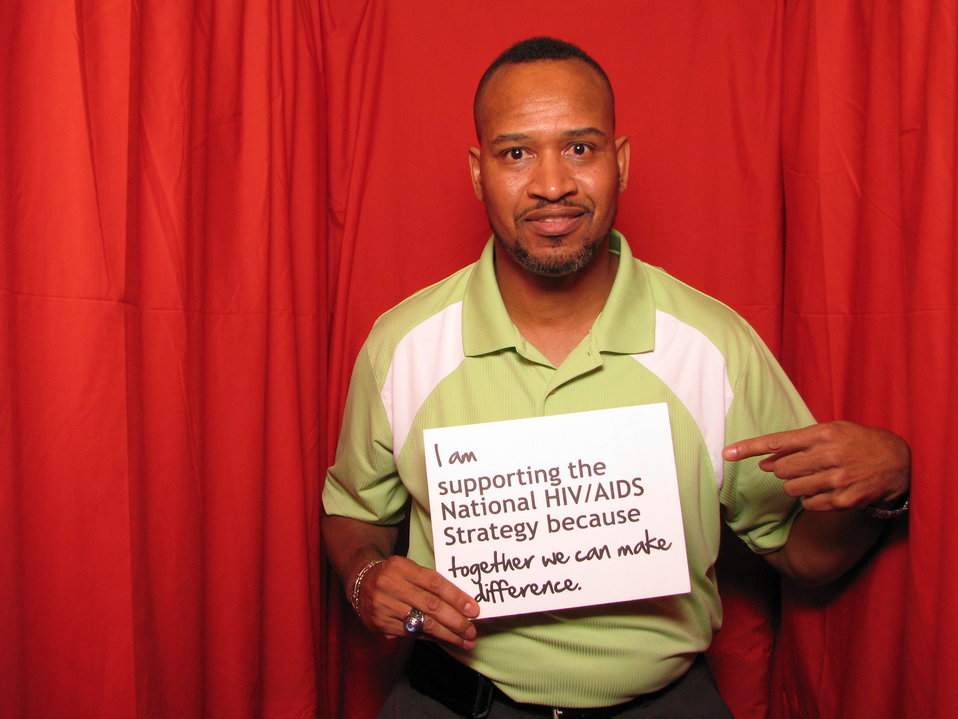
I am supporting the National HIV/AIDS Strategy because Together we can Make a Difference

From the AIDS.gov photo booth at the U.S. Conference on AIDS, September 2010 (Orlando, FL).